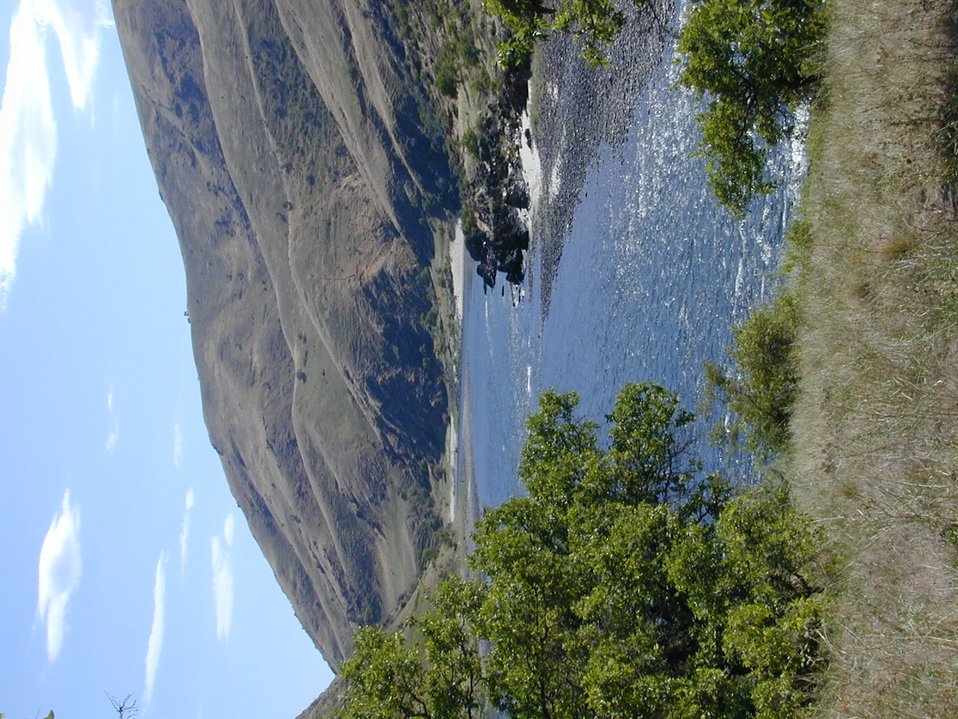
Recreation Rafting on Lower Salmon River Cottonwood Field Office UCSC Upper Columbia Salmon Clearwater District